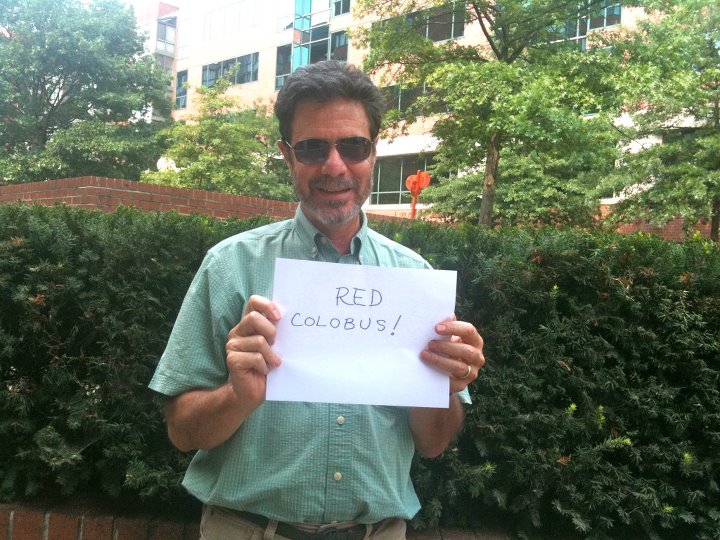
Richard Ruggiero, 'Red Colobus,'

International Affairs participates in FFI's In Our Hands campaign